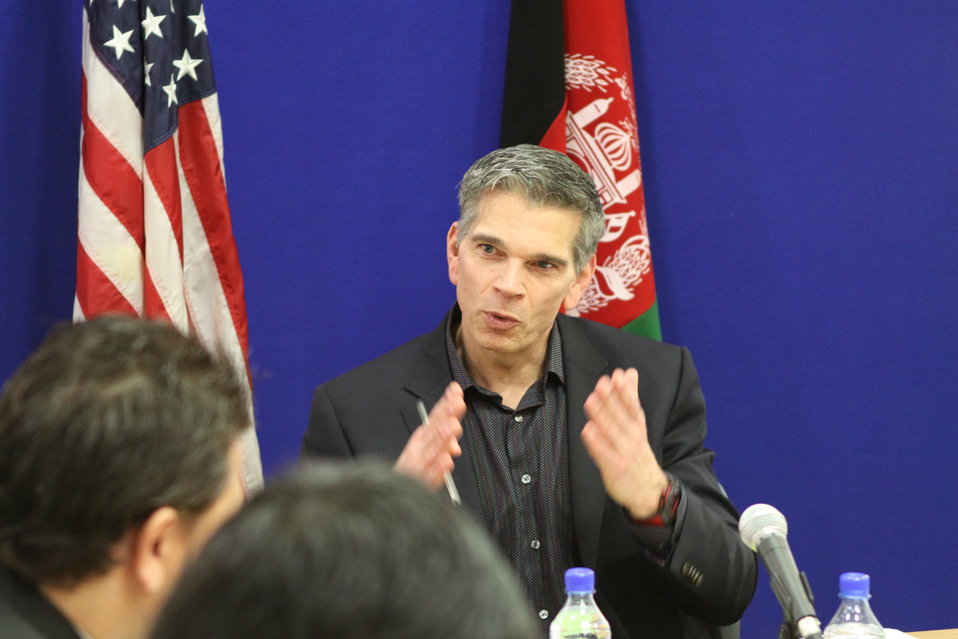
USAID Mission Director Earl Gast Conducts a Media Roundtable with Afghan Media, March 17, 2011